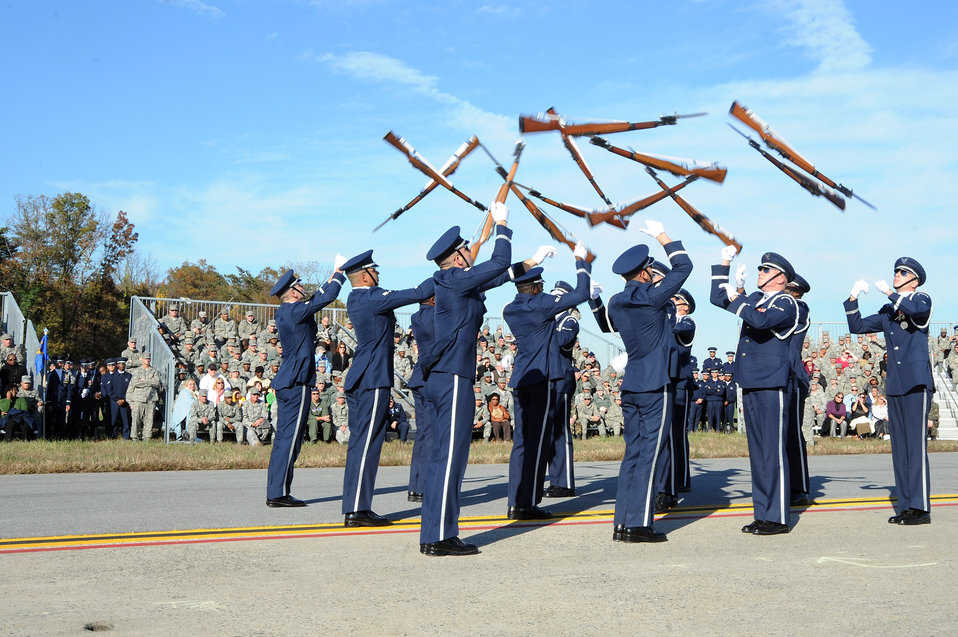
JB Andrews CC Call

Members of the U.S. Air Force Honor Guard drill team perform a maneuver during the 11th Wing commander's call Nov. 2, 2010, at the Joint Base Andrews, Md. The commander's call highlighted the unique assets of the 11th WG through demonstrations by the 1st Helicopter Squadron, the Air Force Honor Guard and the Air Force Band.